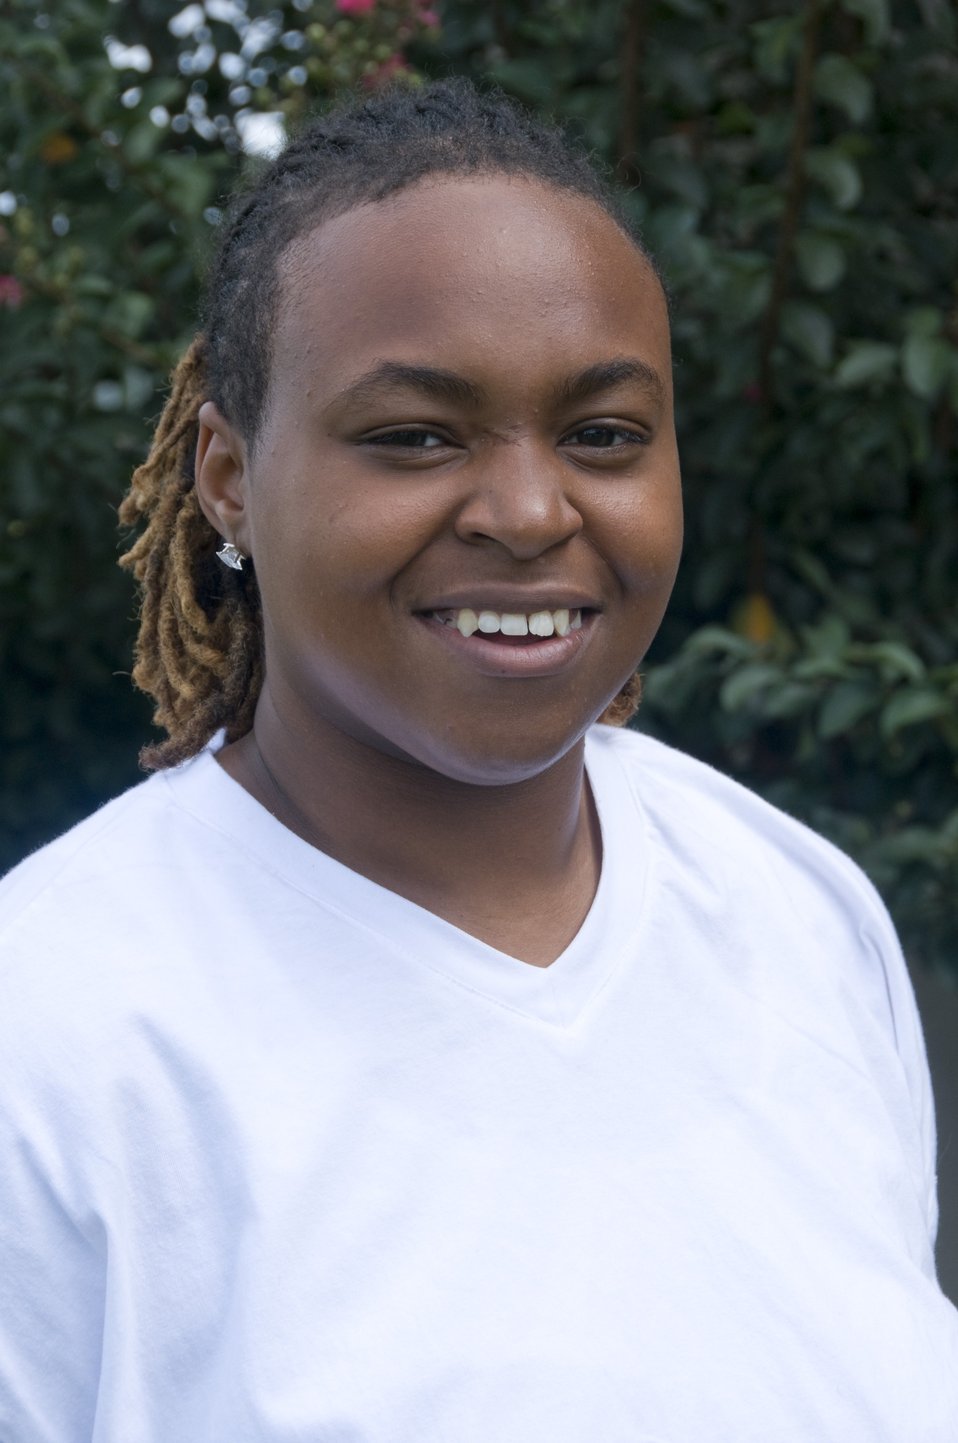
Kera Woods